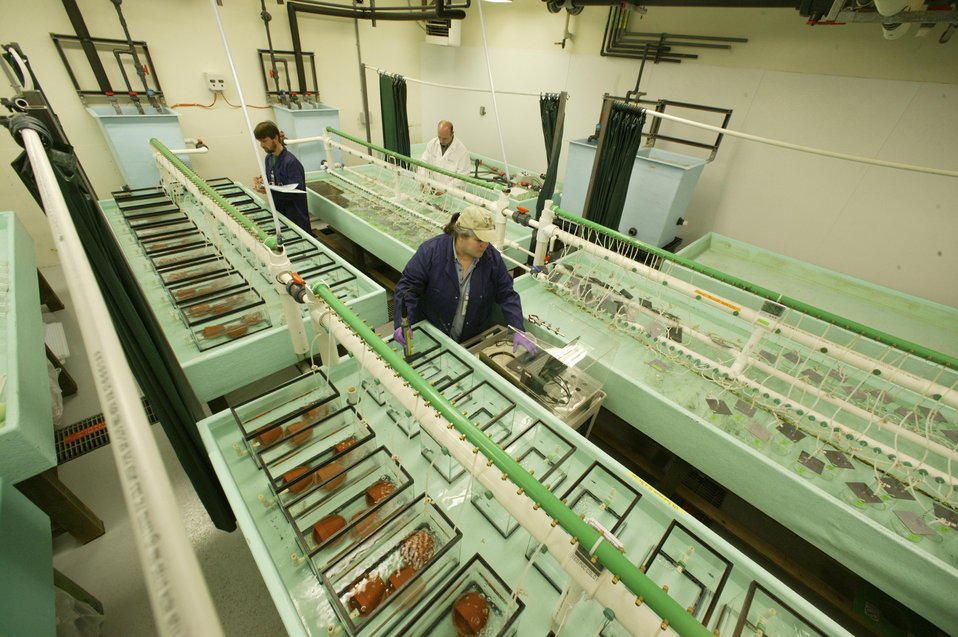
TOXICITY TESTS BEING CONDUCTED AT THE MARINE SCIENCES LABORATORY AT THE PACIFIC NORTHWEST NATIONAL LABORATORY.

RESEARCHERS MAKE DAILY OBSERVATIONS AND TAKE WATER QUALITY MEASUREMENTS IN TOXICITY TESTS AT THE LABORATORY. THE PACIFIC NORTHWEST NATIONAL LABORATORY AT THE MARINE SCIENCES LABORATORY IS DEVELOPING EARLY WARNING SYSTEMS THAT CAN COLLECT SAMPLES FROM THE TOP MICROLAYER OF WATER WHERE CONTAMINANTS CAN CONCENTRATE, ENABLING MORE SENSITIVE, ACCURATE AND EARLY IDENTIFICATION OF CONTAMINANTS OF CONCERN.